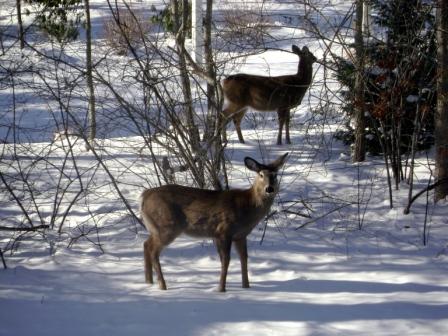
Deer

Monomoy National Wildlife Refuge, MA.